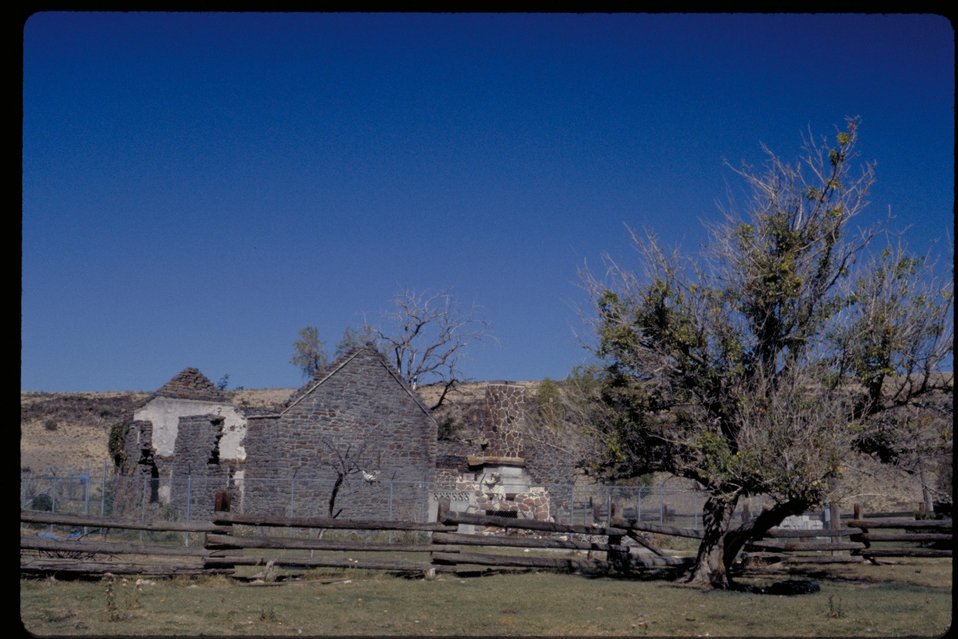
Canyon Creek Stage Station Oregon Trail Lower Snake River District